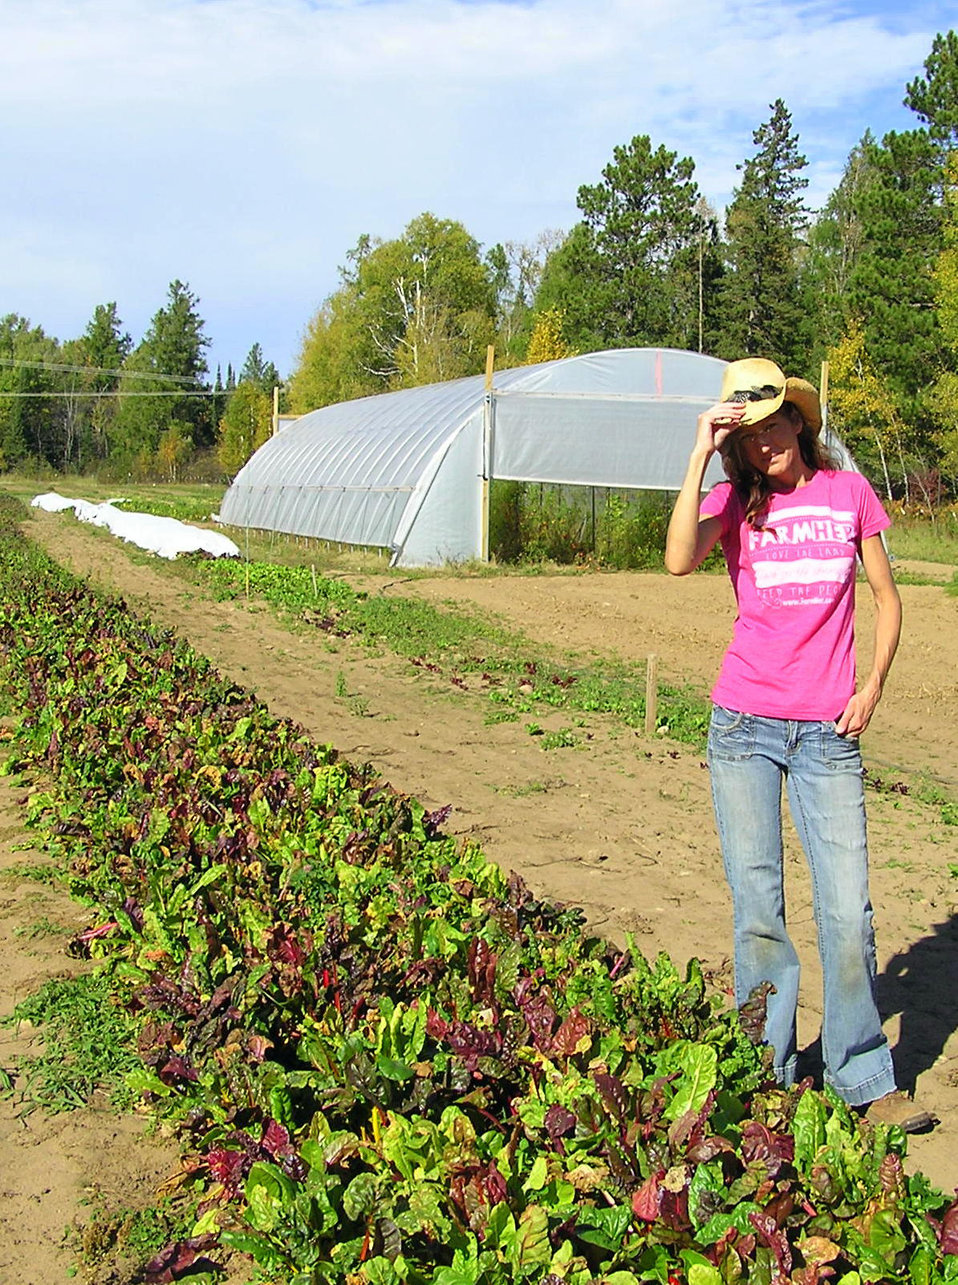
Kate Paul operates a community supported agricultural operation in Minnesota.